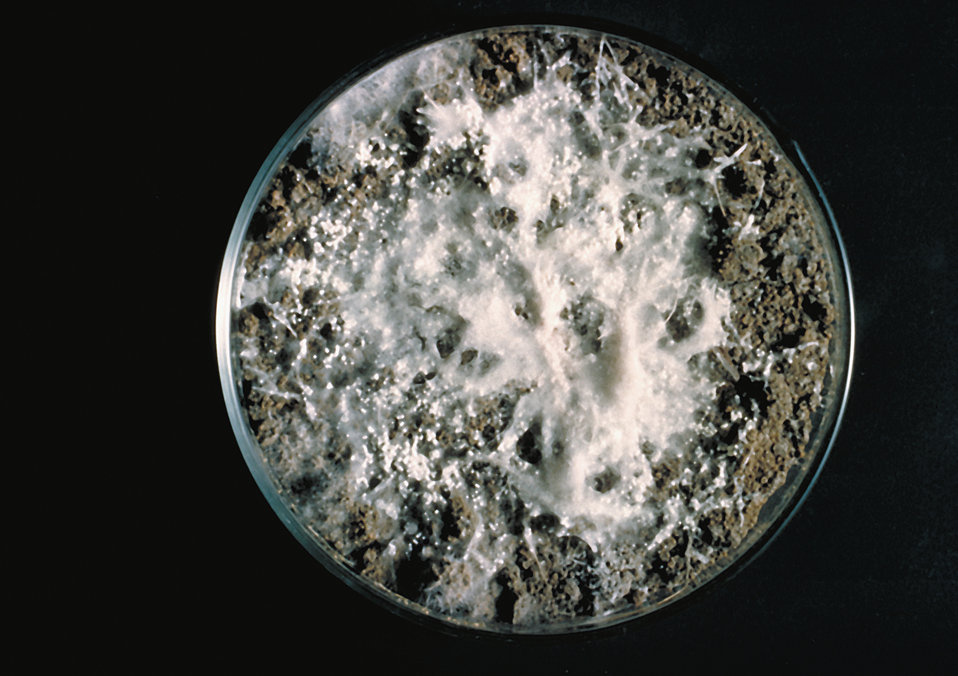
These Arthroderma grubyi cleistothecia were grown on a soil and hair plate culture; formerly Nannizzia grubyia.